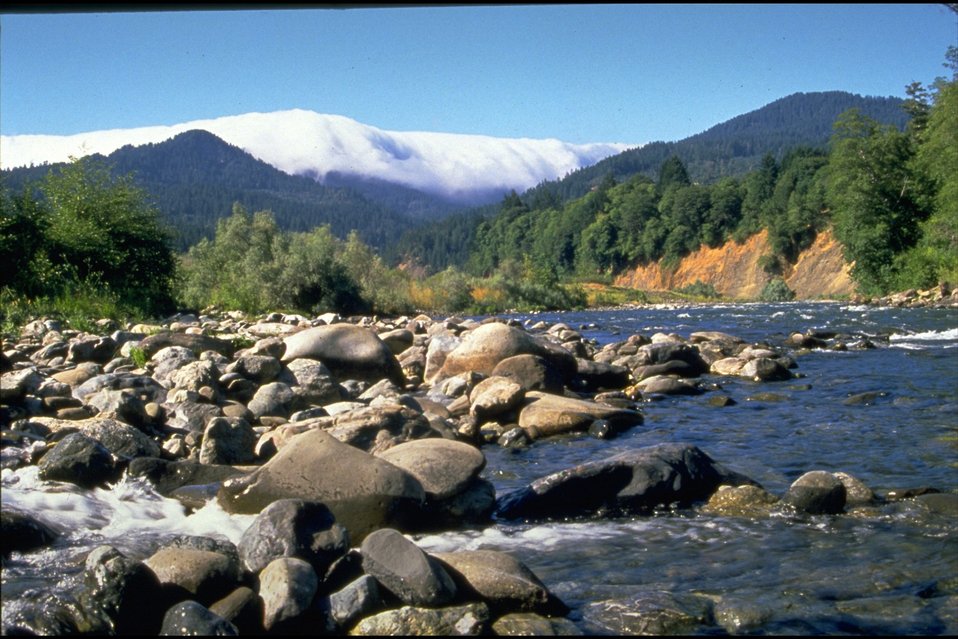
Rogue River, near Watson Creek, wild section.